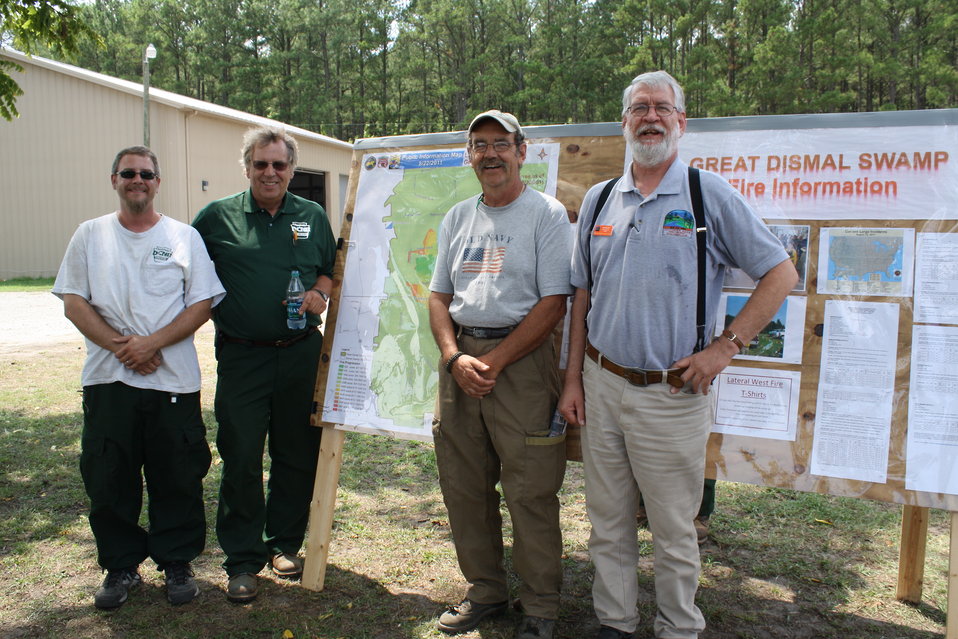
Pennsylvania dreaming

Suffolk, VA, August 2011: Several current and past employees of the Pennsylvania Bureau of Forestry work with the Southern Area Type 2 Incident Management Team at the Lateral West Fire on Great Dismal Swamp National Wildlife Refuge. From left to right: Rick Temple, John Bearer, Ray Miller, and Joe Miller.